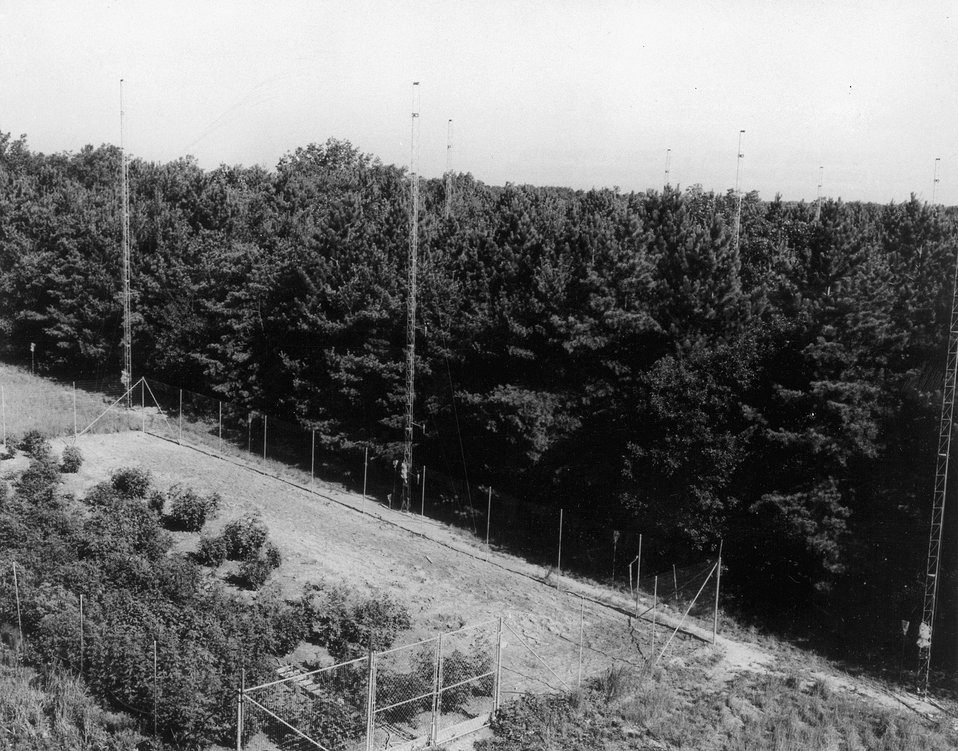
Forest dispersion end deposition grid installed by Brookhaven National Laboratory meteorologists in a heavily wooded section of the Laboratory site. c. 1968